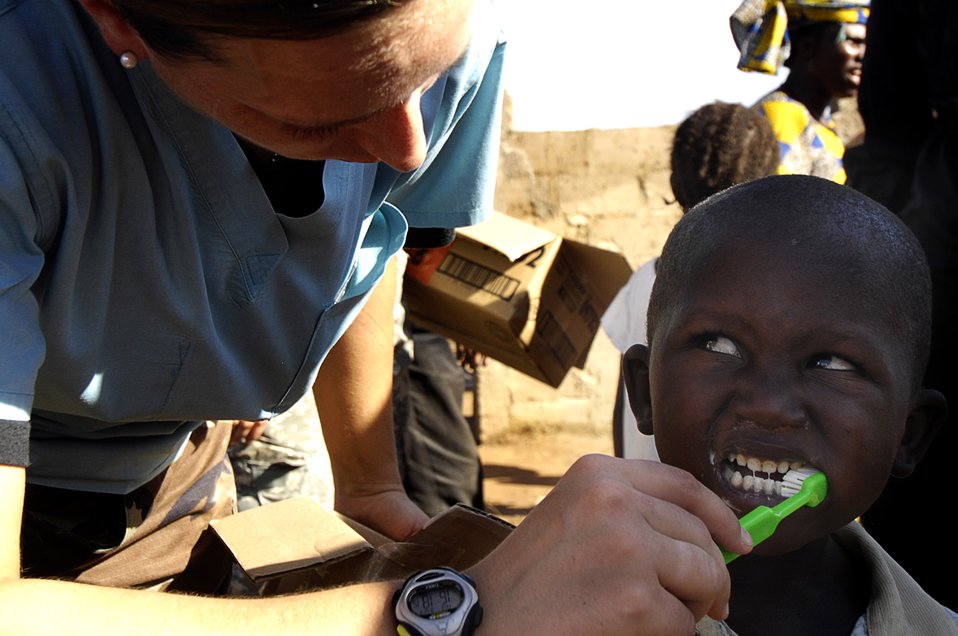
And don't forget to floss

Staff Sgt. Patricia Wheatley, from the 435th Dental Squadron at Ramstein Air Base, Germany, helps a local boy brush his teeth during a medical capabilities exercise in Senkoro, Mali. The exercise helps foster relationships of peace, security and cooperation among Trans-Sahara nations.